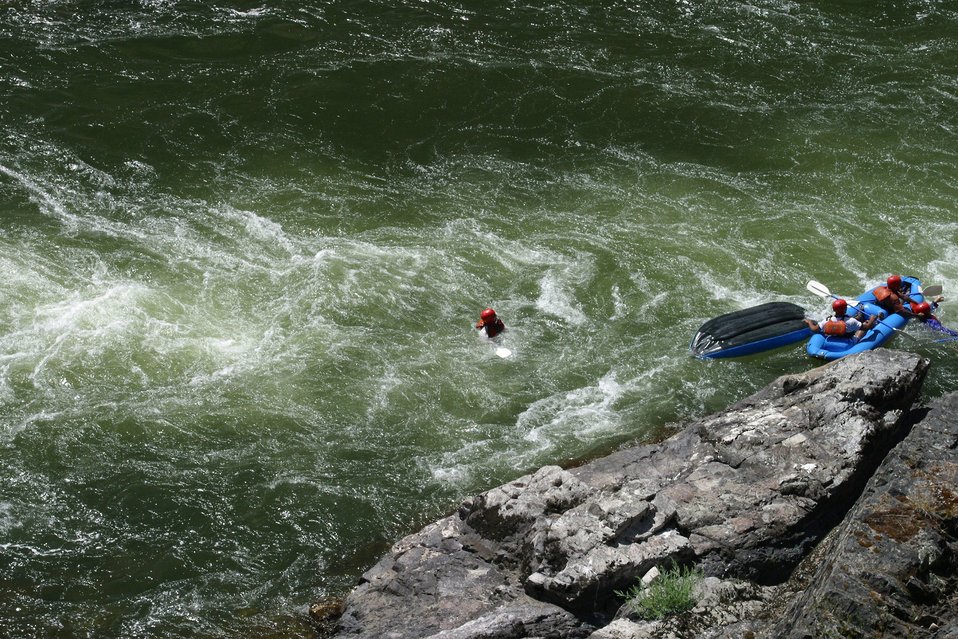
Boater at Grave Creek Falls